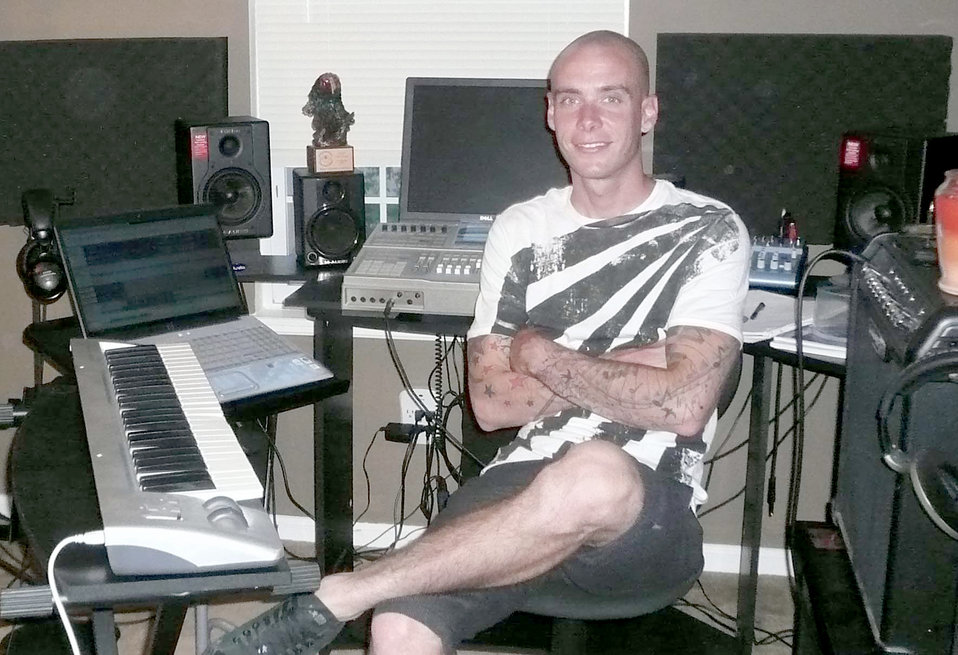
Schriever musician hits it big with original song

Staff Sgt. Richard Justice recently won the My Air Force Life Original Song Contest for his original song,